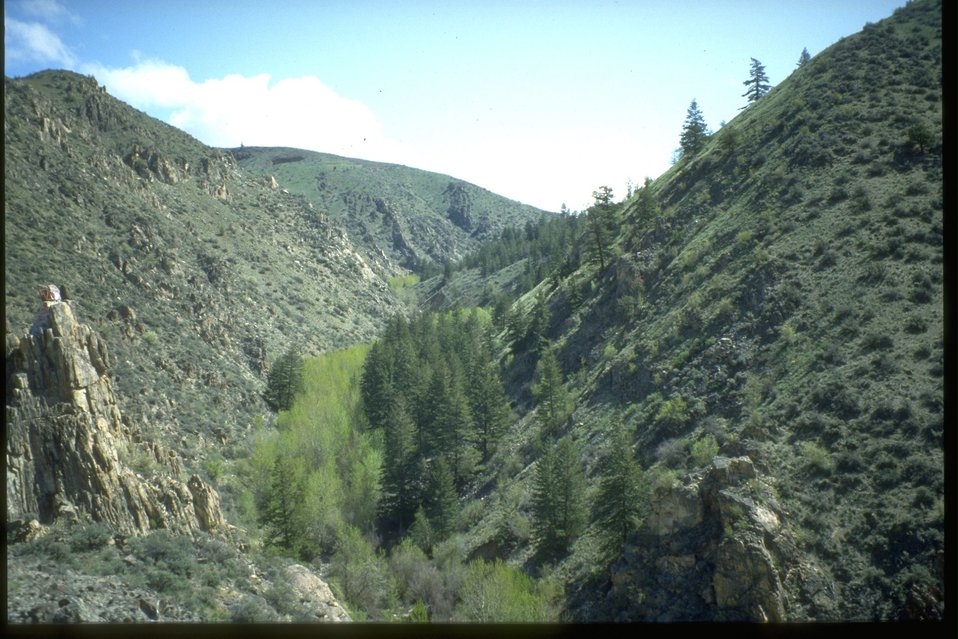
Riparian area in Douglas County, WA. (not BLM land)